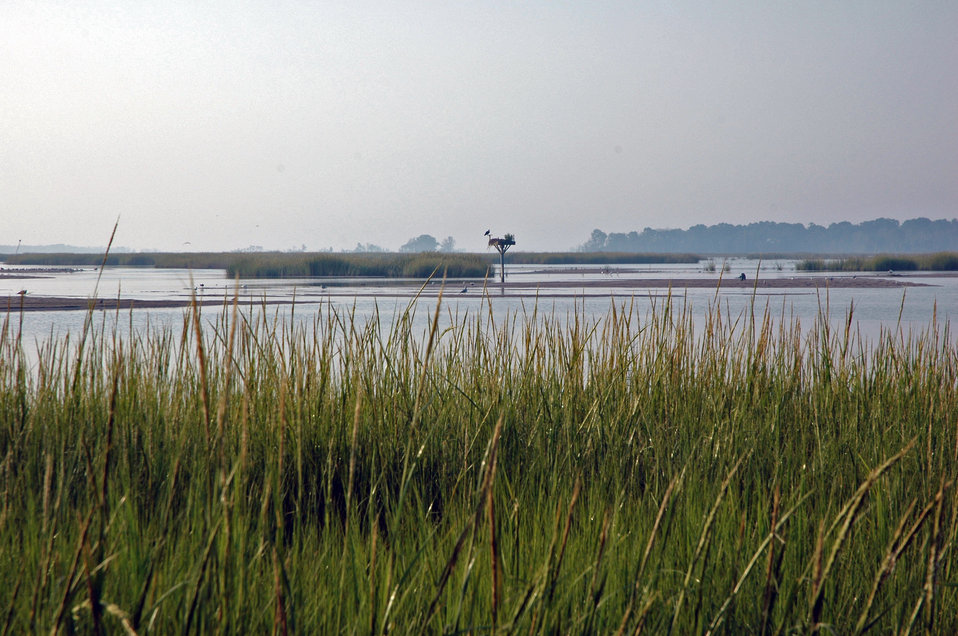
Salt marsh at Prime Hook National Wildlife Refuge.